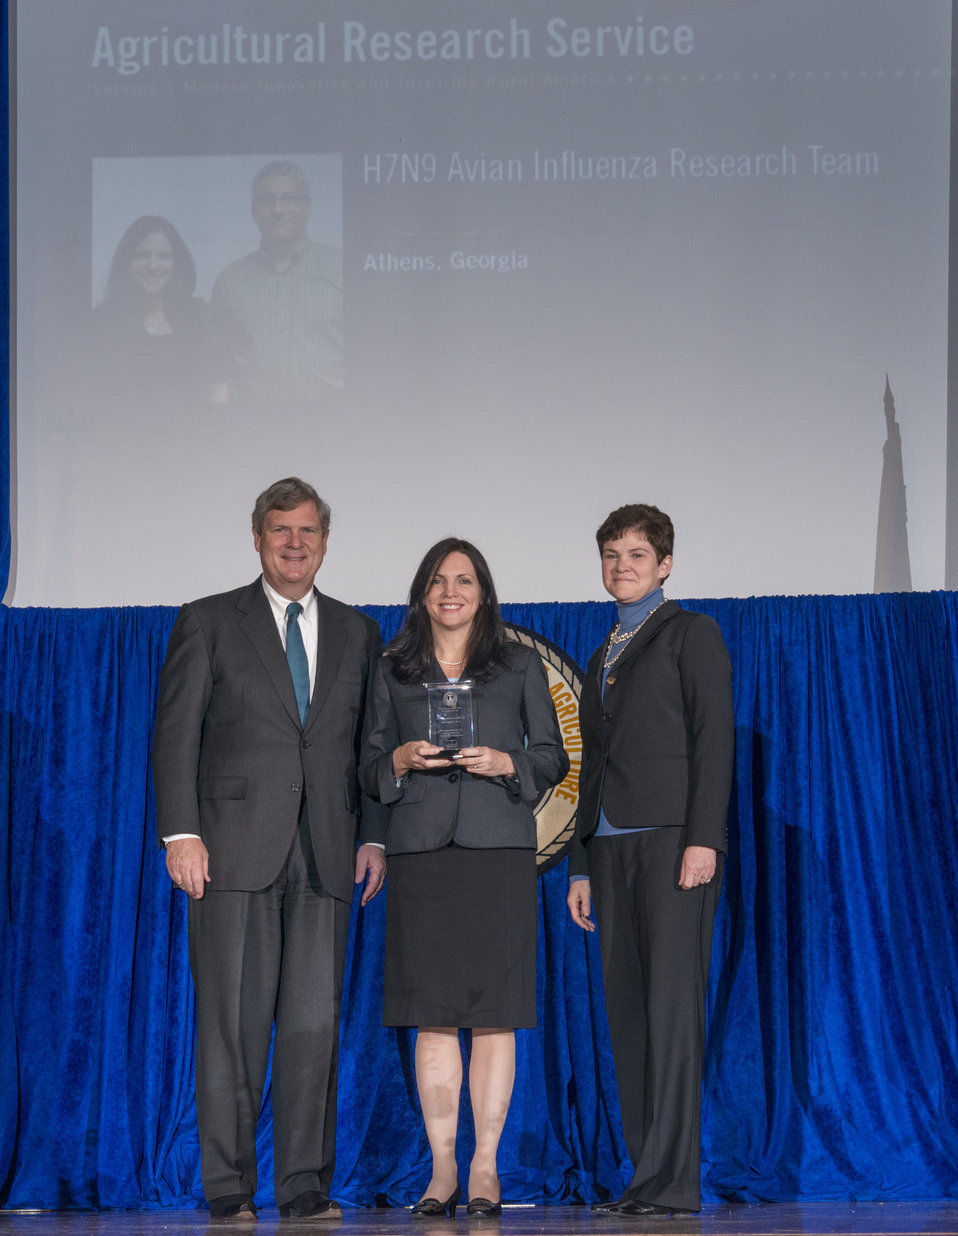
Agriculture Secretary Tom Vilsack and Agriculture Deputy Secretary Krysta Harden present the Secretary’s Honor Award H7N9 Avian Influenza Research Team leader Mary J. Pantin-Jackwood for coordinated Agricultural Research Service (ARS)/Animal and Plant Health Inspections Service (APHIS) response to the Chinese H7N9 avian influenza outbreak, which provided critical scientific data necessary for control and diagnosis of the virus nationally and internationally at the 2013 Secretary's Honor Awards in the Jefferson Auditorium at the U.S. Department of Agriculture (USDA) in Washington, D.C. on Wednesday, Dec. 11, 2013.